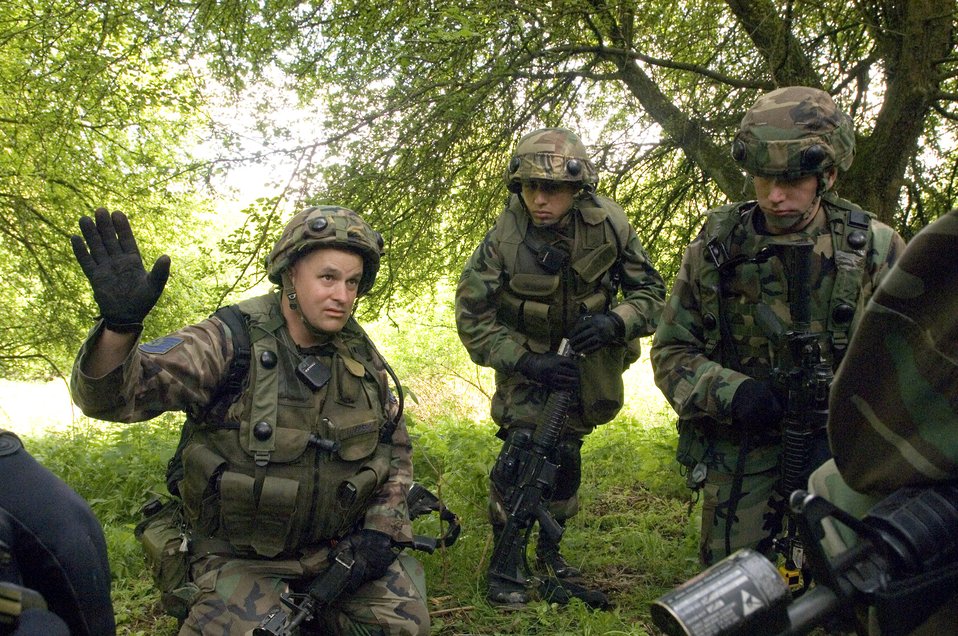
Urban terrain training

(From left) Tech. Sgt. Keith Lundberg explains the plan of attack to Airman 1st Class Nicholas Sisouphone and 1st Lt. Raymond Fortner during military operations in urban terrain training in Baumholder, Germany, on Sunday, May 14, 2006. Training is conducted by Airmen of the 786th Security Force Squadron at Sembach Air Base, Germany. Lieutenant Fortner, Sergeant Lundberg and Airman Sisouphone are with the 31st Security Forces Squadron at Aviano Air Base, Italy.